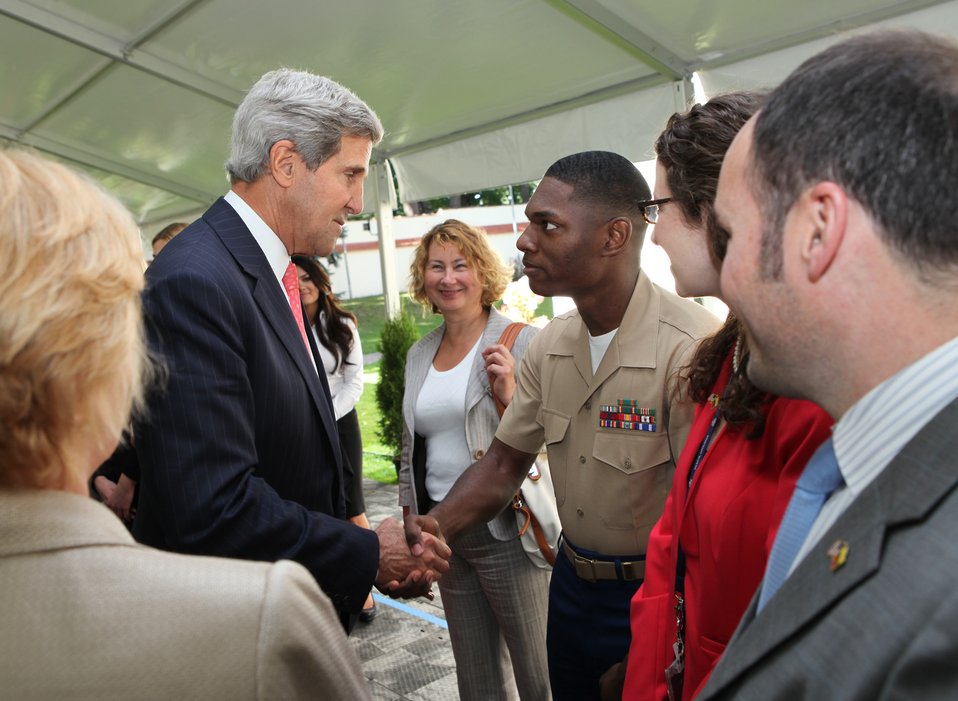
Secretary Kerry Greets Staff of Embassy Vilnius

U.S. Secretary of State John Kerry greets Embassy Vilnius staff after his address at the U.S. Embassy in Vilnius, Lithuania, on September 7, 2013.